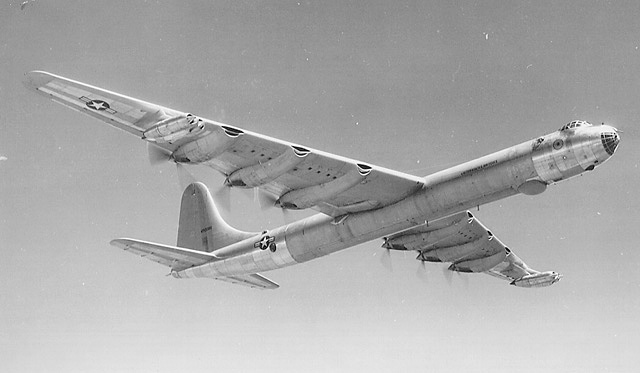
B-36 Peacemaker

1950's -- B-36 Peacemaker